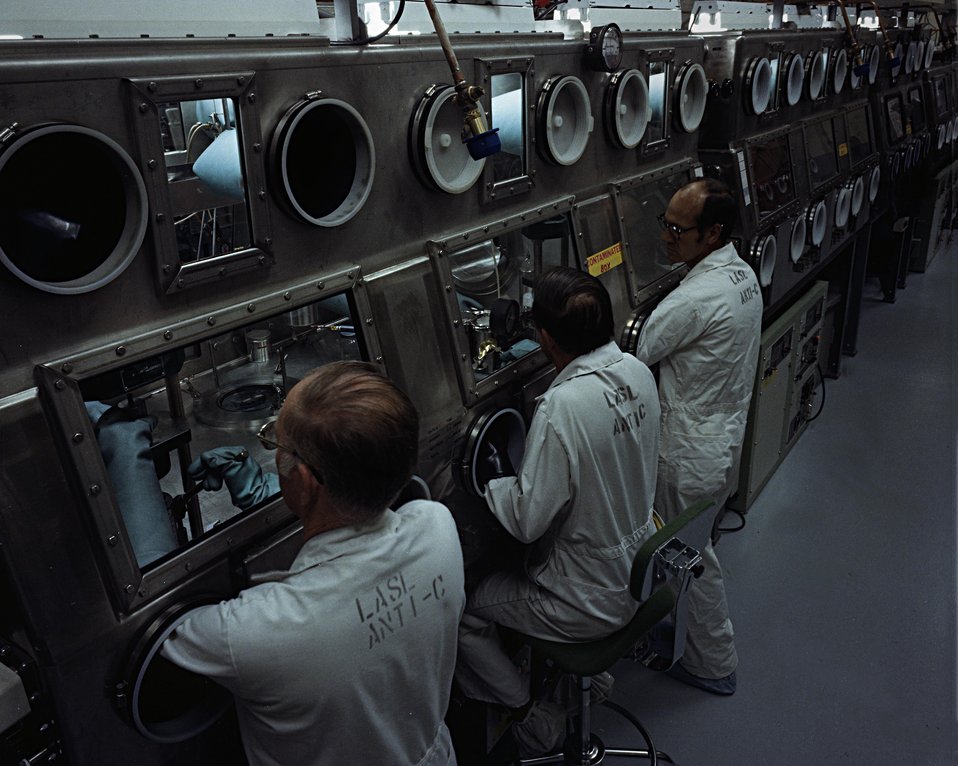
TECHNICIANS ENGAGED IN PELLET PRESSING.

THE PLUTONIUM FACILITIES AT THE TA-55 AT LANL ARE USED FOR WORK ON THE TWO MAJOR ISOTOPES, PU-239 AND PU-238, OF THE MAN-MADE ELEMENT PLUTONIUM. TA-55 PROGRAMS HAVE ENCOMPASSEDMANY PHASES OF PLUTONIUM RESEARCH AND DEVELOPMENT. OPERATIONS BEGAN IN APRIL, 1978.